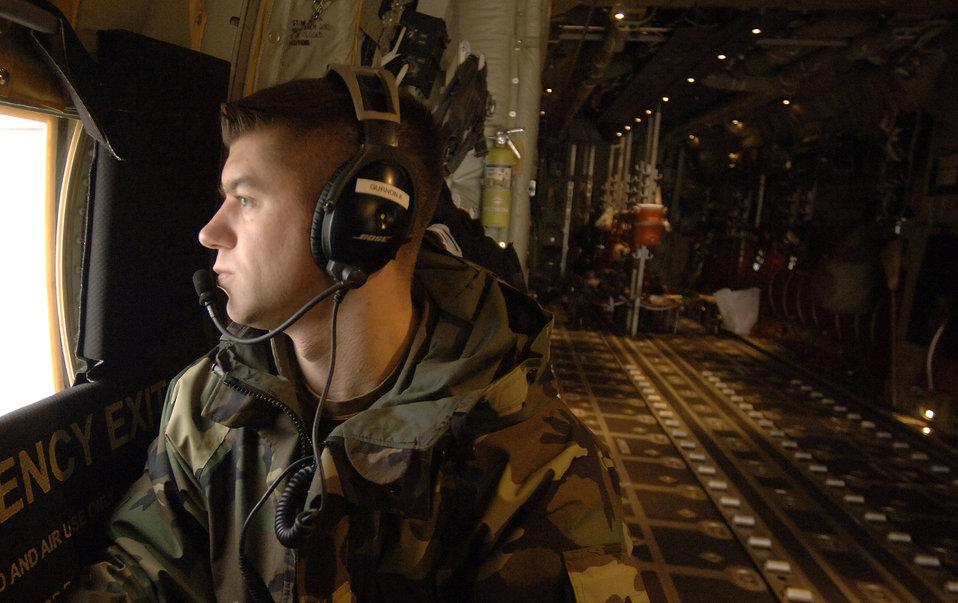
Ready to go

Tech. Sgt. Kyle Gurnon checks out the window of a C-130 Hercules as it prepares to take off Jan. 9 from Ramstein Air Base, Germany. Sergeant Gurnon is a Rhode Island Air National Guard loadmaster with the 143rd Airlift Wing at Quonset State Airport.